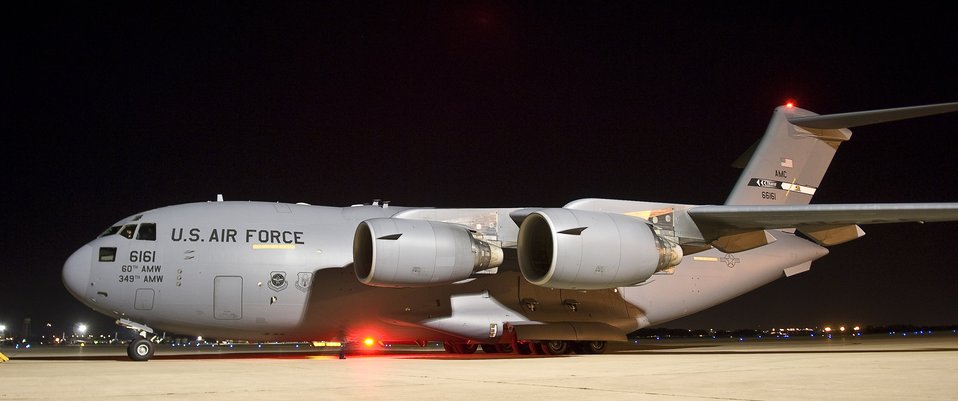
3 contractors rescued in Colombia, return to U.S.

A C-17 Globemaster III aircraft with the three former hostages inside arrives July 2 at Lackland Air Force Base, Texas. They were rescued in Columbia. The aircraft is from Travis Air Force Base, Calif. The crews are from various bases to include Pope AFB, N.C. and Charleston AFB, S.C.